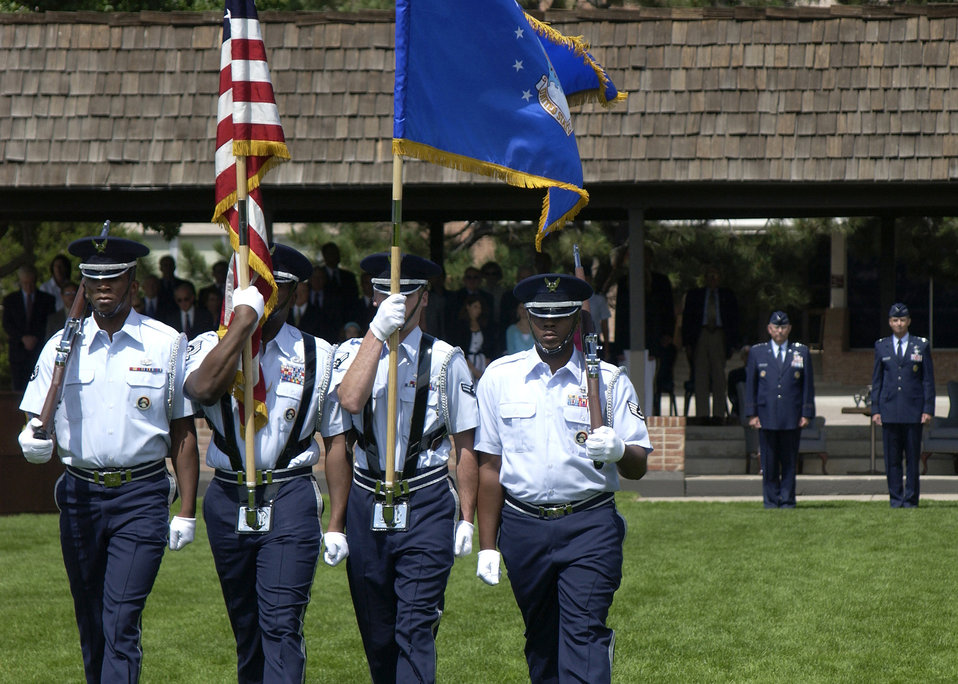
Former astronaut takes command of Air Force Space Command

Air Force Chief of Staff Gen. T. Michael Moseley and Gen. Kevin P. Chilton, commander of Air Force Space Command, await the posting of the colors by the High Frontier Honor Guard during the AFSPC assumption of command ceremony on Monday, June 26, at Peterson Air Force Base, Colo.